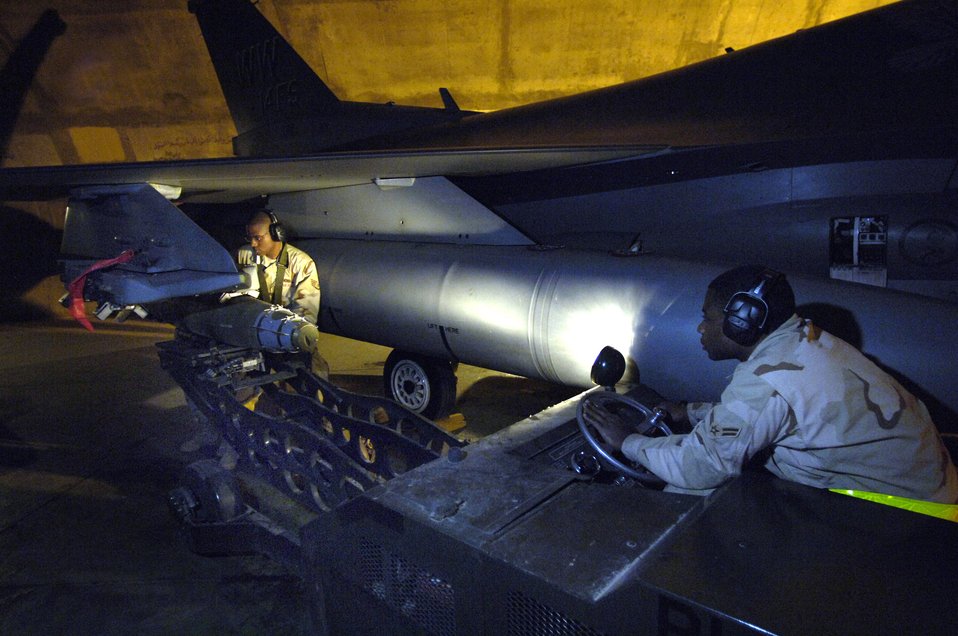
Arming the Falcons for fight

Staff Sgt. Christopher Curry and Airman 1st Class Brandon Cunningham prepare to load munitions on an F-16 Fighting Falcon March 4 at Balad Air Base, Iraq. The Airmen are assigned to the 332nd Expeditionary Aircraft Maintenance Squadron.